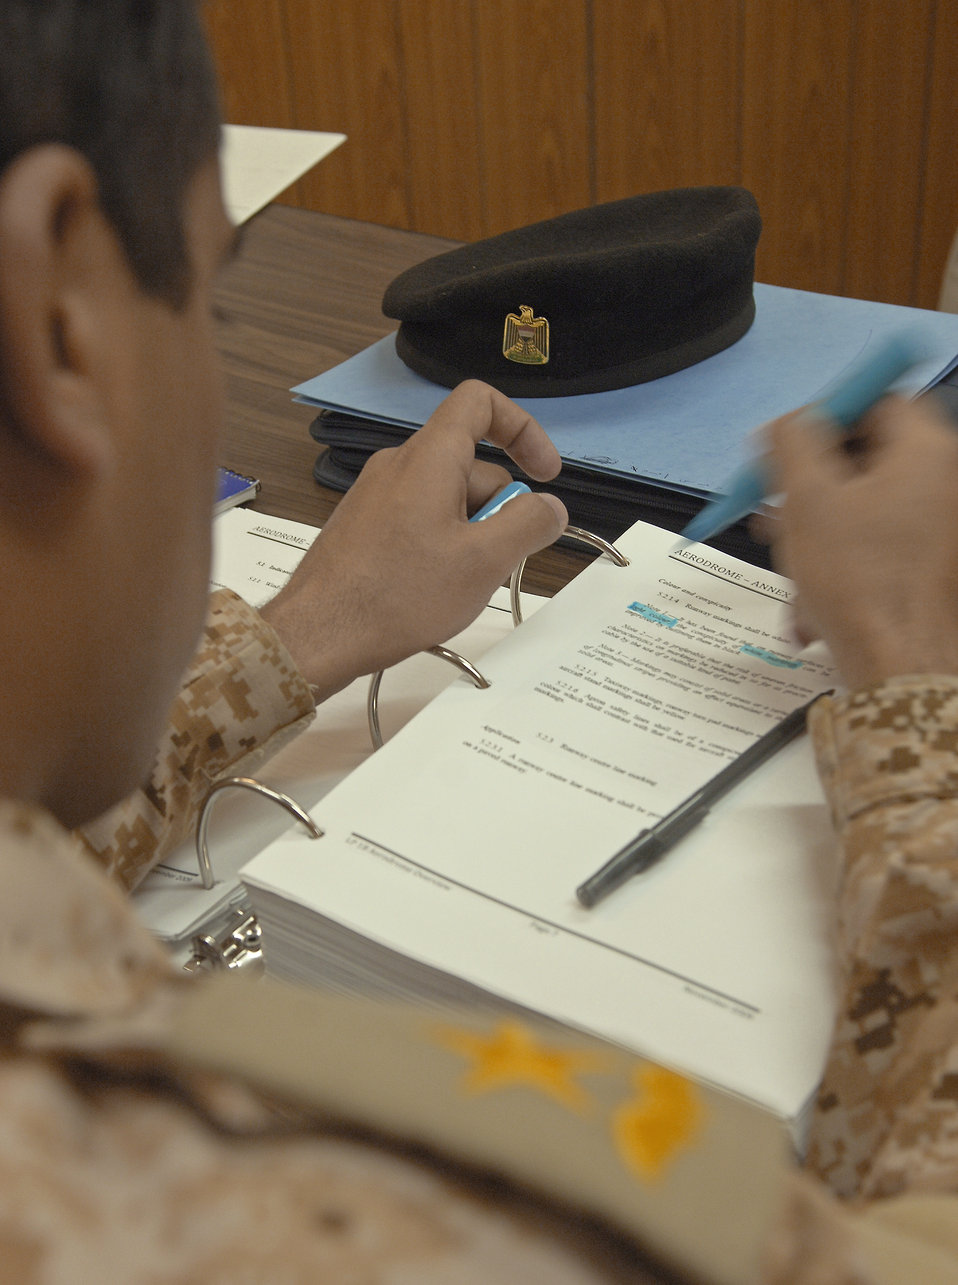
Air traffic advisers

An Iraqi air force student highlights course notes Feb. 3, 2011, during an Iraq Training and Advisory Mission-Air aerodrome class.